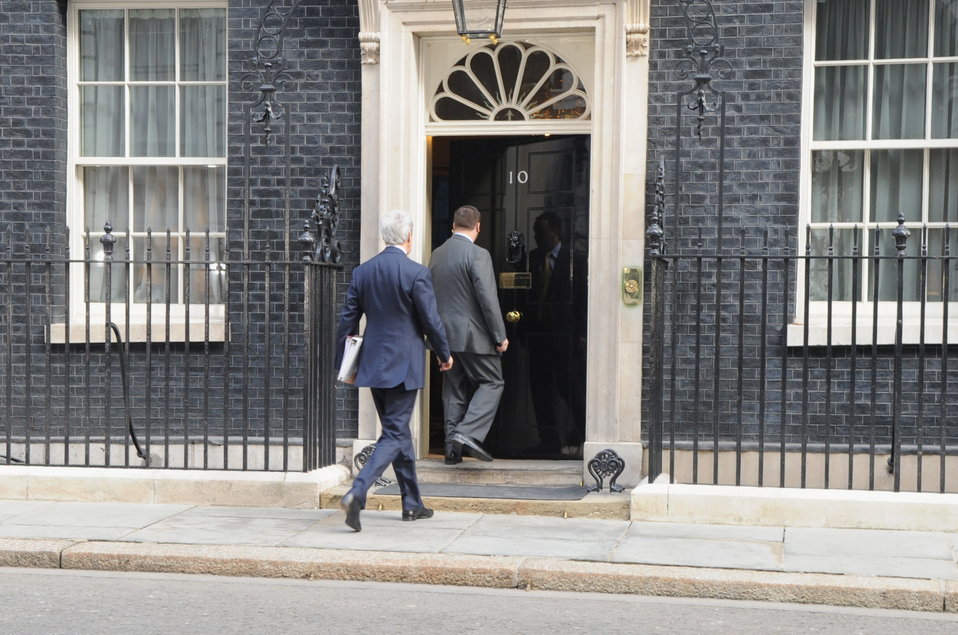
Secretary Kerry Arrives in London to Meet British Prime Minister Cameron

U.S. Secretary of State John Kerry arrives at No. 10 Downing Street in London, United Kingdom, on March 14, 2014, for a meeting with British Prime Minister David Cameron focused on Middle East peace talks and Russian intervention in Crimea.